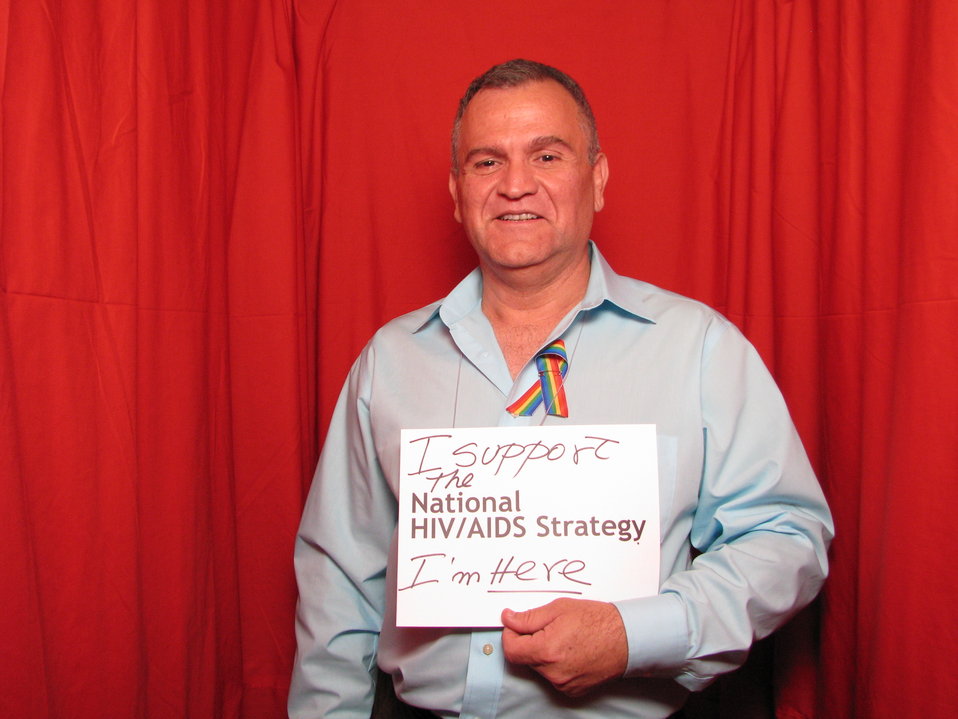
I support the National HIV/AIDS Strategy. I'm here

From the AIDS.gov photo booth at the U.S. Conference on AIDS, September 2010 (Orlando, FL).